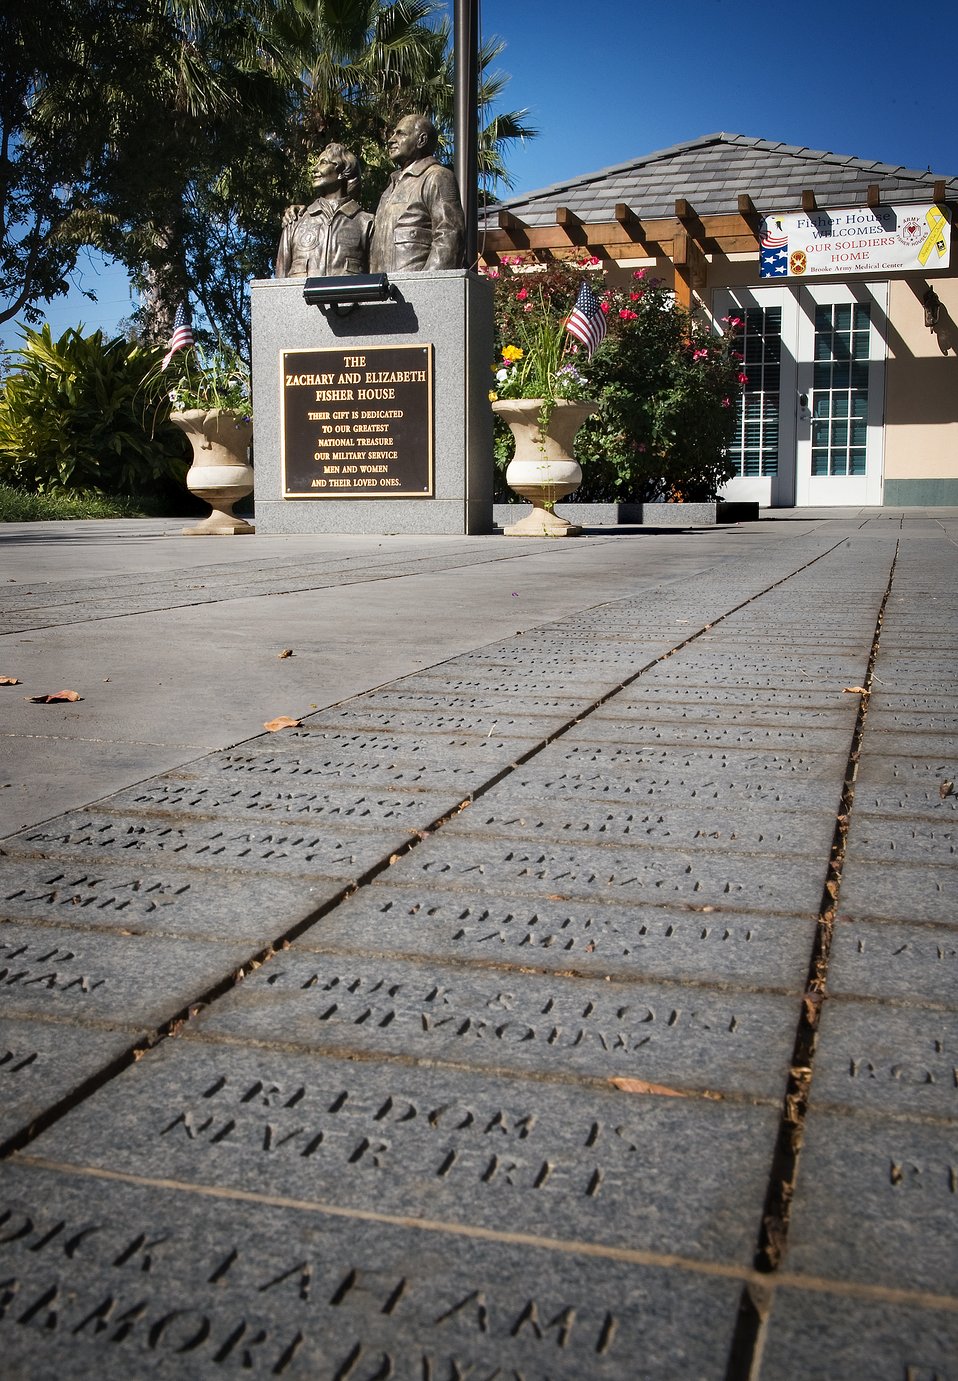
AF Spouse Raises Half a Million for Fisher House

Names of generous donors etched into paver stones surround a statute dedicated to Zachary and Elizabeth Fisher in a courtyard between the two newer Fisher Houses in San Antonio on Nov. 25. Each of these 16,800 square foot Fisher Houses can accommodate up to 42 families visiting their injured love ones. Private donations were used to fund their construction, operation and maintenance.